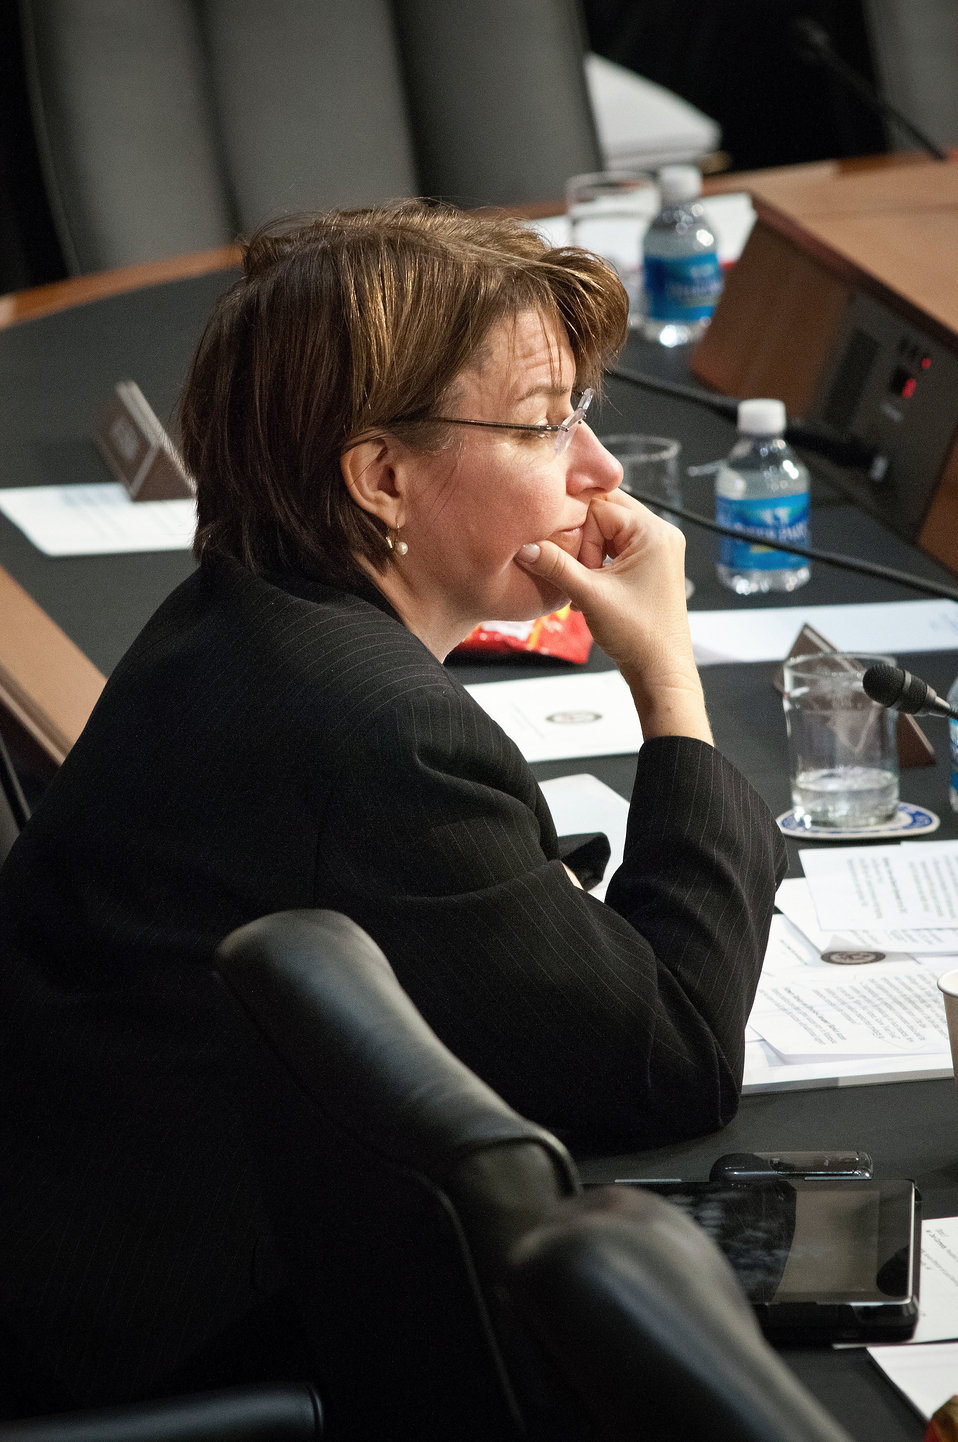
Senator Amy Klobucher (MN) listens to Agriculture Secretary Tom Vilsack during Secretary Vilsack’s testimony on “Healthy Food Initiatives, Local Production and Nutrition,” before the Senate Agriculture Committee on Wednesday, March 7, 2012 in Washington, D.C.